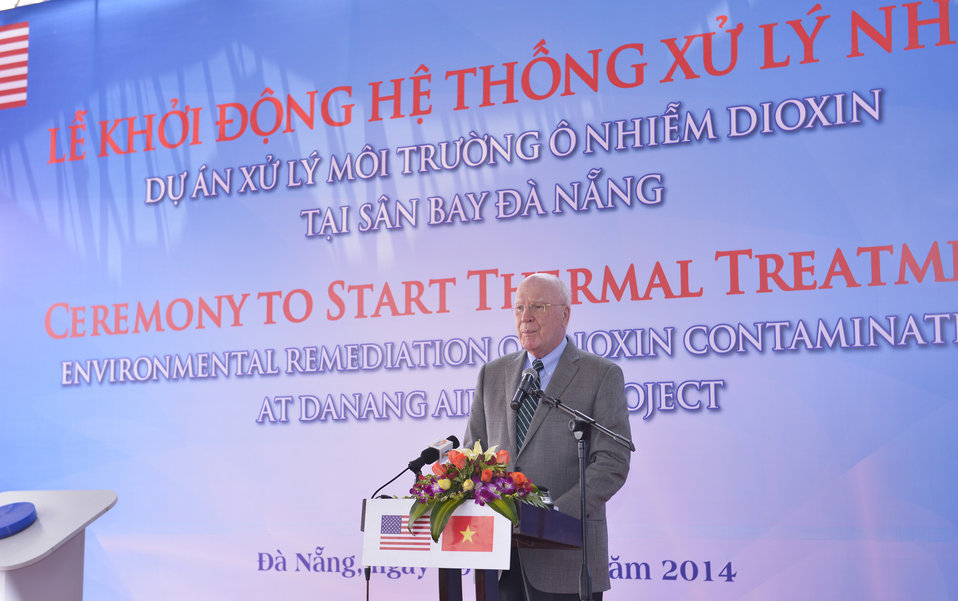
Senator Patrick Leahy speaks at the ceremony to turn on treatment system at Danang Airport

Danang, April 19, 2014.